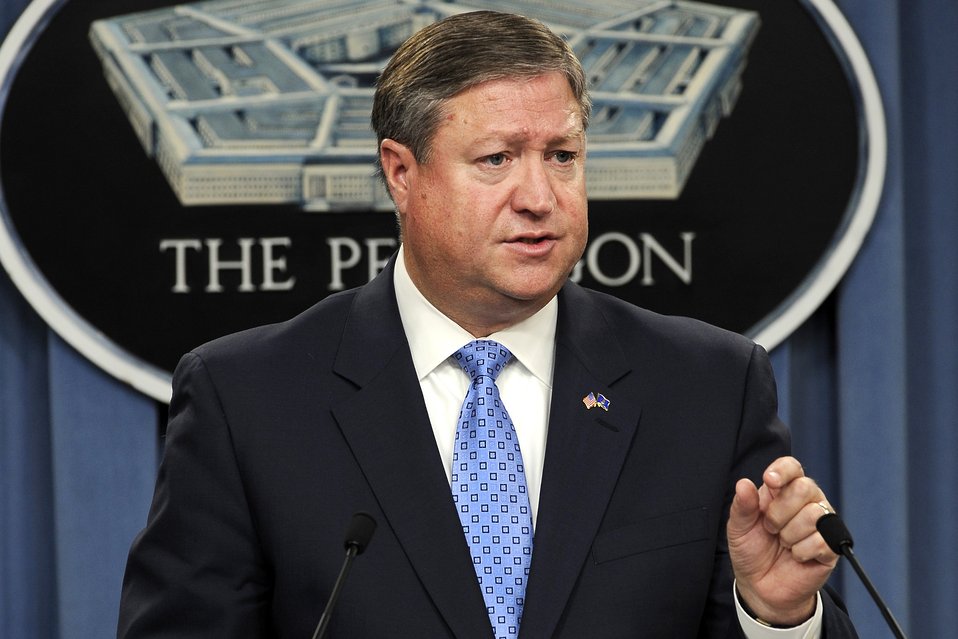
DOD officials announce requirement for new aerial tanker competition

Secretary of the Air Force Michael Donley speaks with members of the press about the Air Force KC-X aerial tanker program during a press conference at the Pentagon, Sept. 24, 2009.